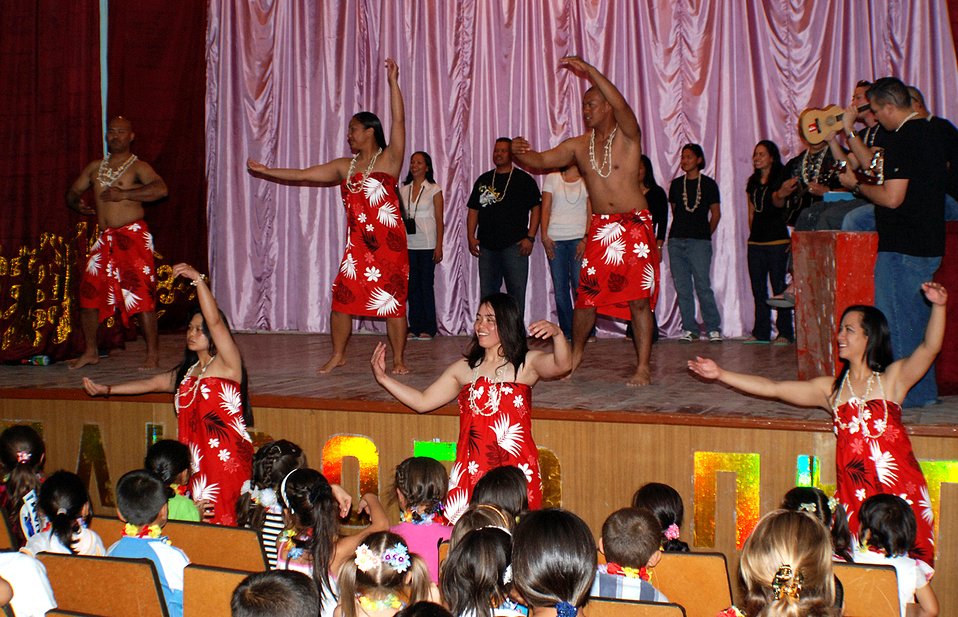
Deployment provides Airmen chance to make lasting relationships

Airmen from Manas Air Base, Kyrgyz Republic, share traditional Pacific Island songs and dances with a group of more than 100 Kyrgyz children in the village of Jeny Pahkta, Aug. 20. Members of the 376th Air Expeditionary Force Support Squadron has sponsored the Kyrygz village for six years, donating clothes and painting and cleaning the local school.